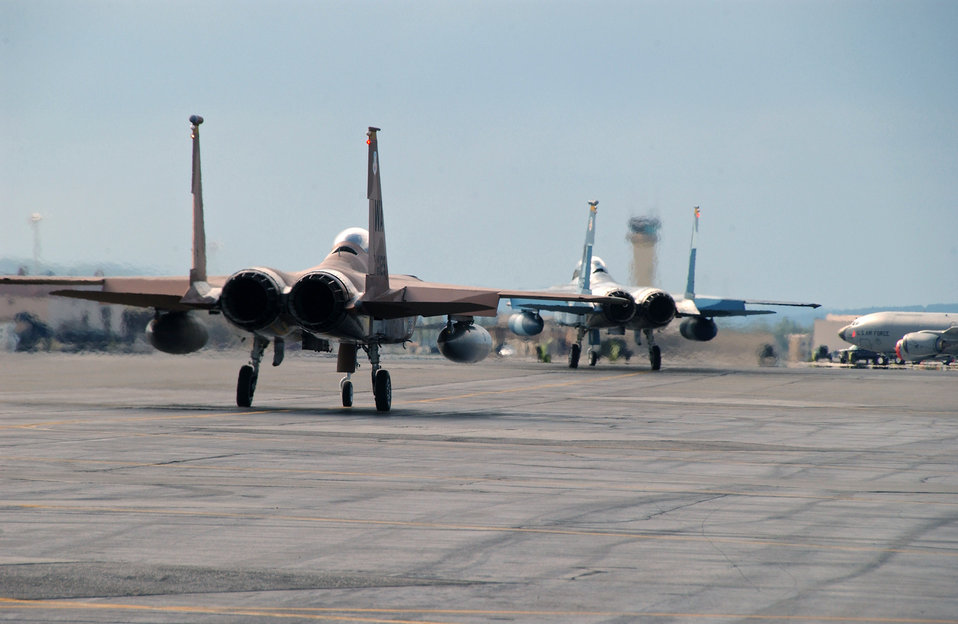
Red Flag-Alaska 07-3

Two F-15 Eagles taxi to the runway July 10 at Eielson Air Force Base, Alaska, prior to a training exercise. These exercises are part of Red Flag-Alaska 07-3, a multi-service, multi-platform coordinated, combat operations exercise, which runs through the July 27.